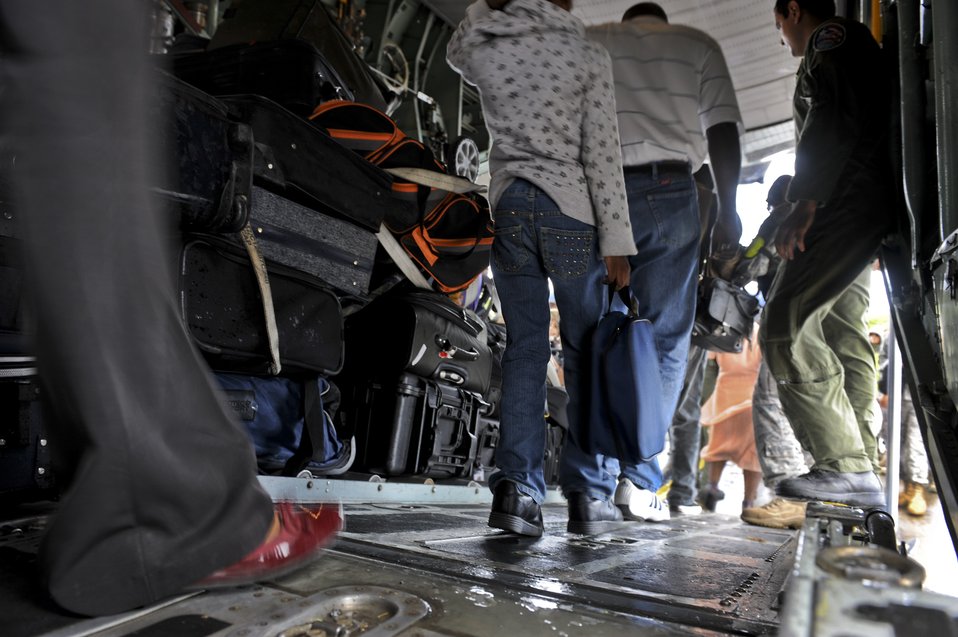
Haiti mission

Airmen from the Puerto Rico Air National Guard’s 156th Airlift Wing assist U.S. citizens off a C-130E Hercules aircraft Jan. 17, that landed in San Juan, Puerto Rico. The American citizens were evacuated from Haiti where Airmen are playing an active role in support of the relief effort there in the aftermath of a devastating earthquake.